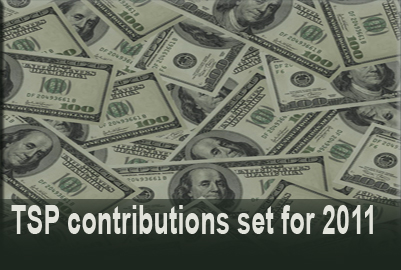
TSP Contributions Set